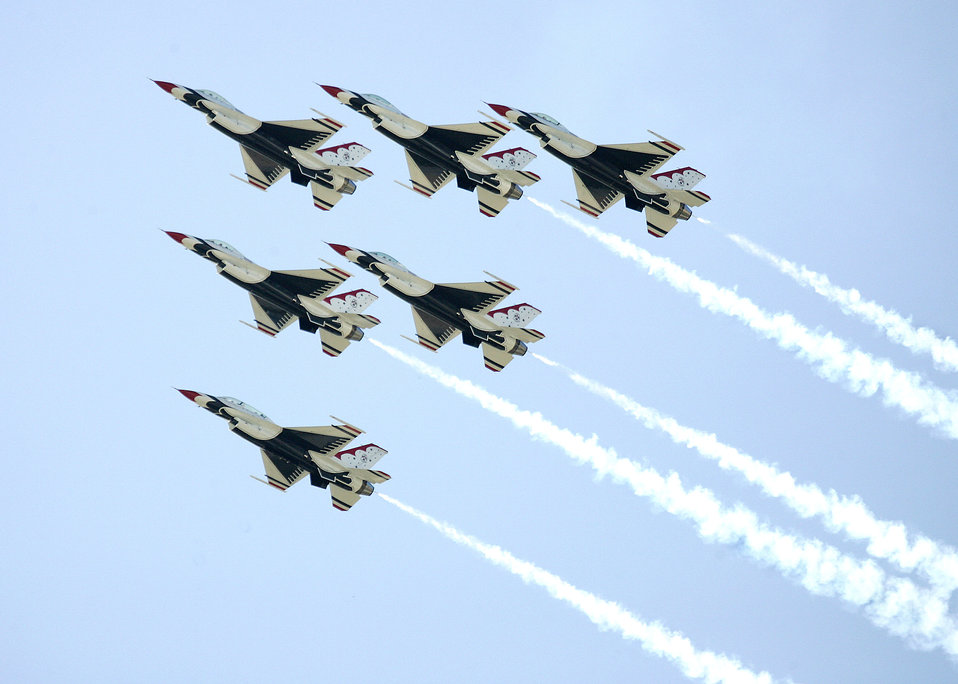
Thunderbirds to kick off Super Bowl XLI

The U. S. Air Force Demonstration Squadron,